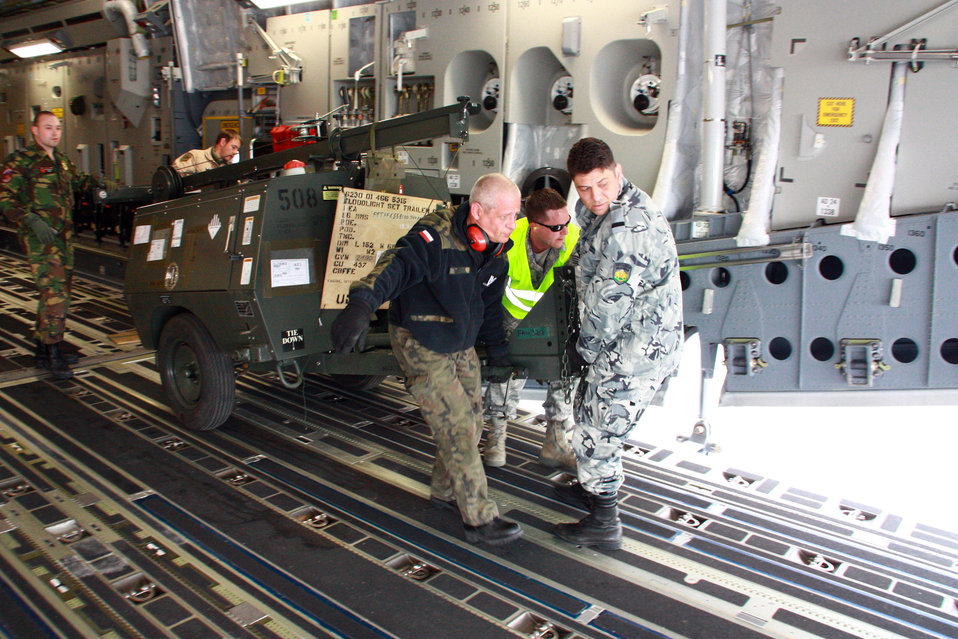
Heavy Airlift Wing

Airmen from the multinational Heavy Airlift Wing move a floodlight set trailer March 30, 2010, in preparation for shipment to units in Afghanistan. HAW Airmen have moved more than 2.1 million pounds of war reserve material essential to surge operations supporting the International Security Assistance Force in Afghanistan. The HAW, based at Papa Air Base, Hungary, operates three C-17 Globemaster III aircraft independently of NATO's military command and comprises 12 nations that activated the unit July 27, 2009.